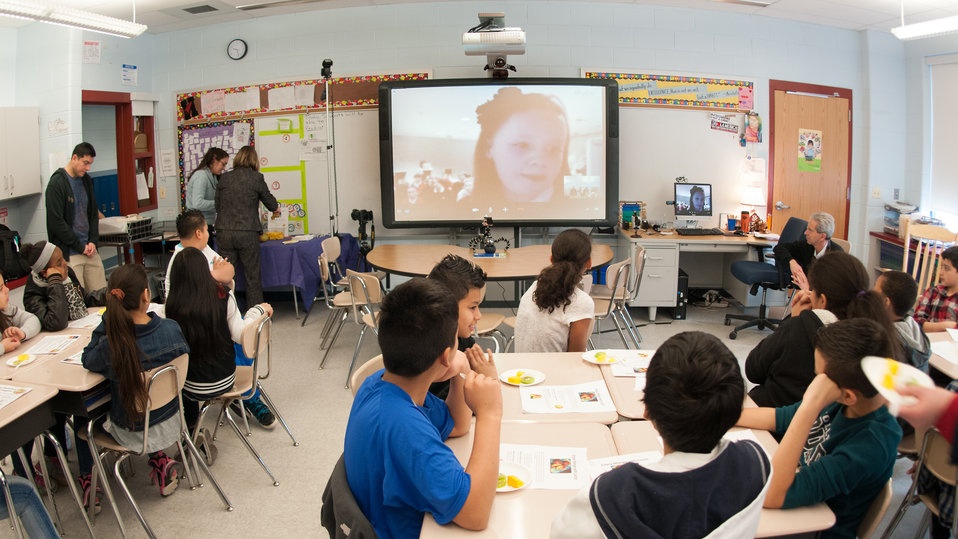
A Dalry Primary School student in North Ayershire, Scotland, United Kingdom, begins the student-to-student conversation, via live overseas video connection to Harmony Hills Elementary School 5th graders, during the inaugural International School Meals Day at Harmony Hills Elementary School in Silver Spring, MD, on Friday, March 8, 2013. Mr. Damien Grasso's 5th grade class was paired with Mrs. Karen McAllister’s class in Scotland. The children were able to share some of the healthy eating and physical activity choices available to them. The Dalry fitness program includes Zumba classes, and Harmony Hills includes a Fitness Club. Both schools have soccer programs. The Harmony Hills 5th grade students tasted and shared their thoughts about their healthy menu items, mango, kiwi, and hummus. USDA's Food and Nutrition Service administers several programs that provide healthy food to children including the National School Lunch Program, the School Breakfast Program, the Child and Adult Care Food Program, the Summer Food Service Program, the Fresh Fruit and Vegetable Program, and the Special Milk Program. Administered by State agencies, each of these programs helps fight hunger and obesity by reimbursing organizations such as schools, child care centers, and after-school programs for providing healthy meals to children. Learn more by visiting www.fns.usda.gov and twitter @USDANutrition.